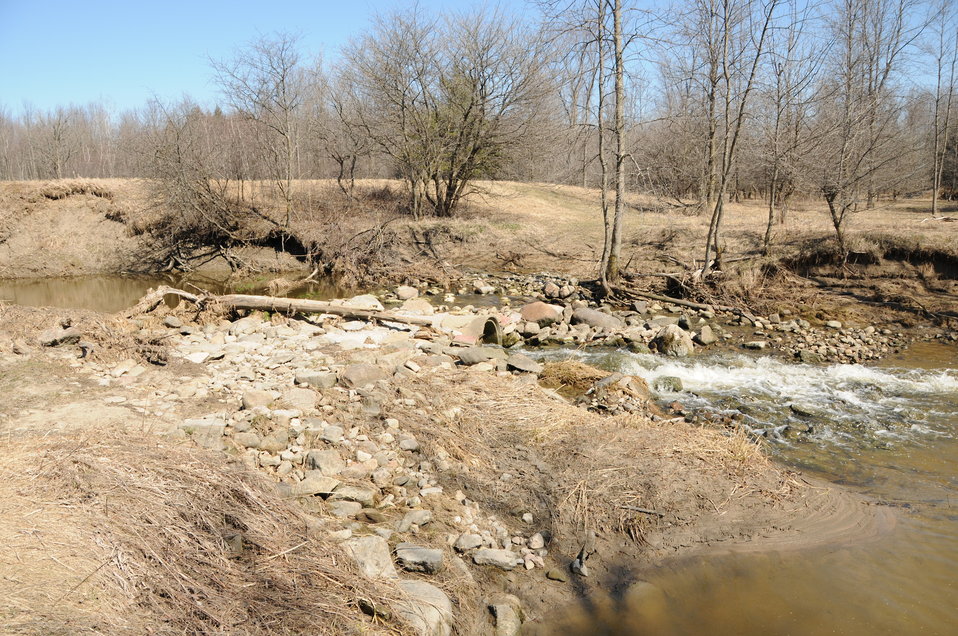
Little Sucker Brook: Site before project

About 18 miles of stream in Little Sucker Brook in Waddington, N.Y., were recently opened for fish passage.

The U.S. Fish and Wildlife Service's Partners for Fish and Wildlife Program led the project.